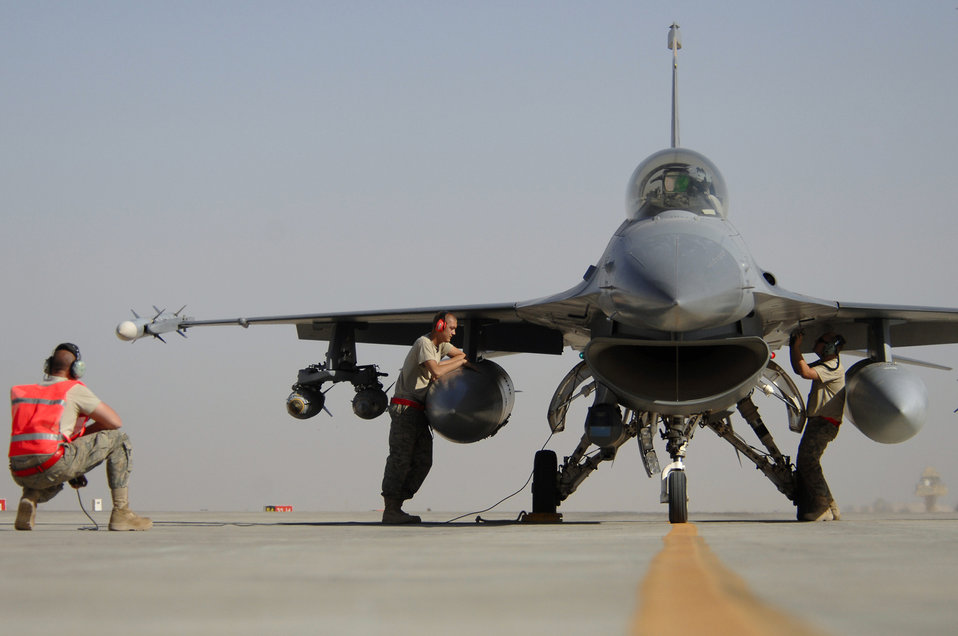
Arming the falcon

JOINT BASE BALAD, Iraq -- Airmen assigned to the 332nd Expeditionary Aircraft Maintenance Squadron, arm an F-16 Fighting Falcon by removing the safety pins here, June 18. The F-16 pilots provide overhead air support to ground forces which provides them a safer operating area.